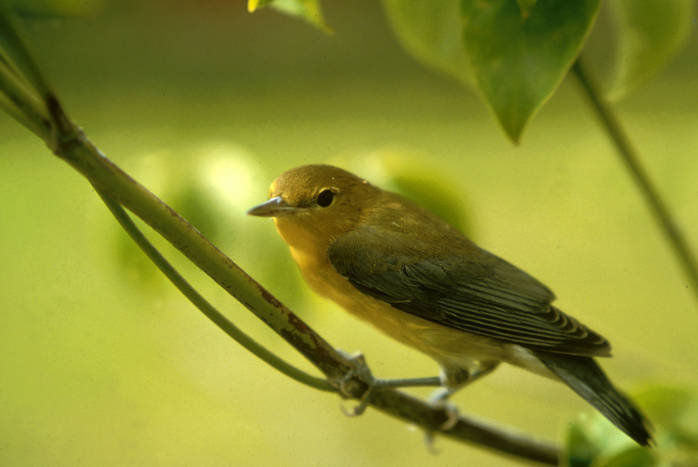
prothonotary warbler